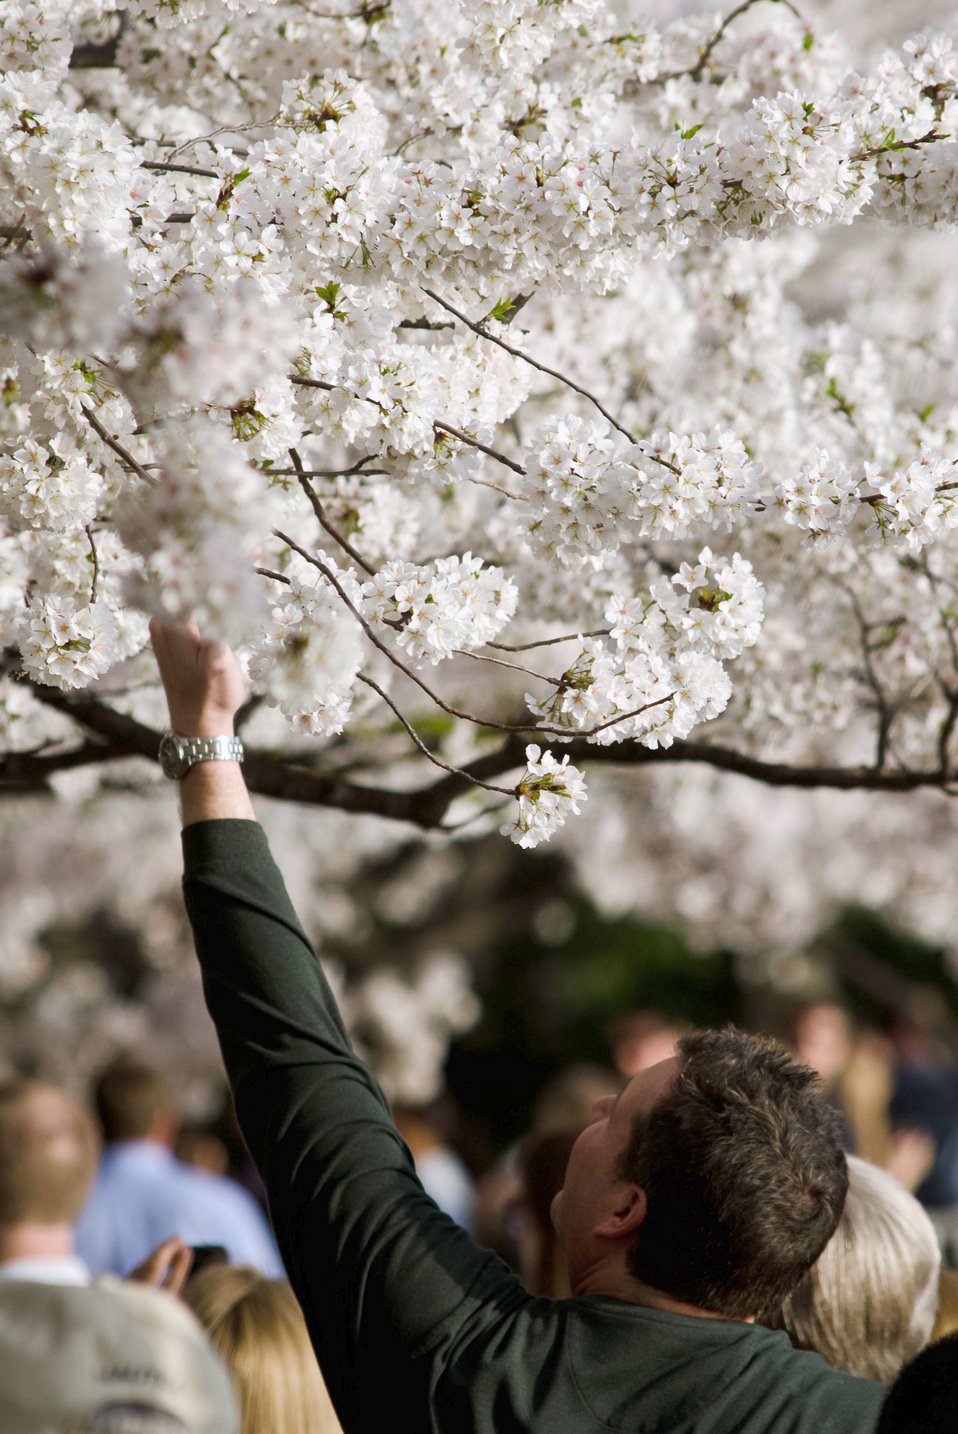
Cherry blossoms at the Tidal Basin in Washington, DC, on Tuesday, March 20, 2012.